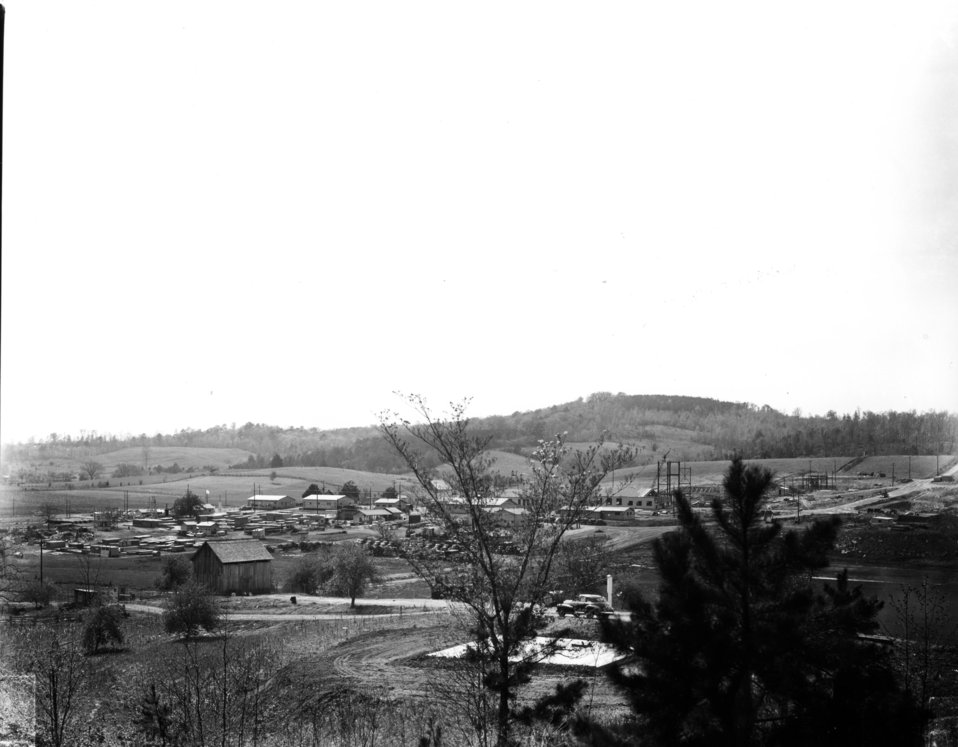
X-10 at Oak Ridge